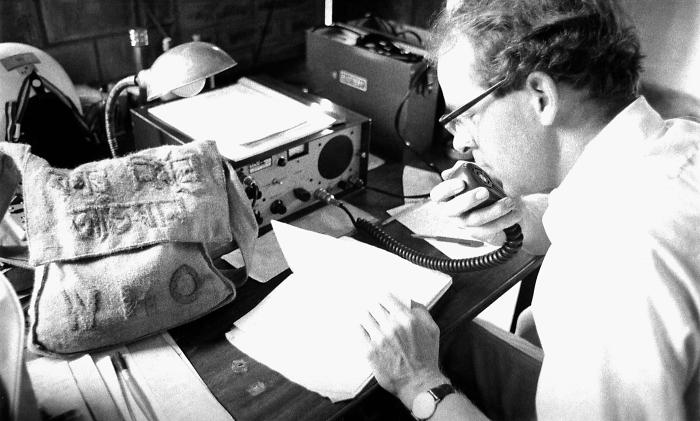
Remembered as David from the United Kingdom, this World Health Organization (WHO) epidemiologist was photographed as he was seated at the 'Smallpox Zero' HQ radio, sending and receiving pertinent eradication campaign information, which he'd share with colleagues later at one of the scheduled group meetings. Travel throughout the terrain of Bangladesh was not easy, and the use of a radio like the one shown here was integral in achieving a successful smallpox eradication outcome.